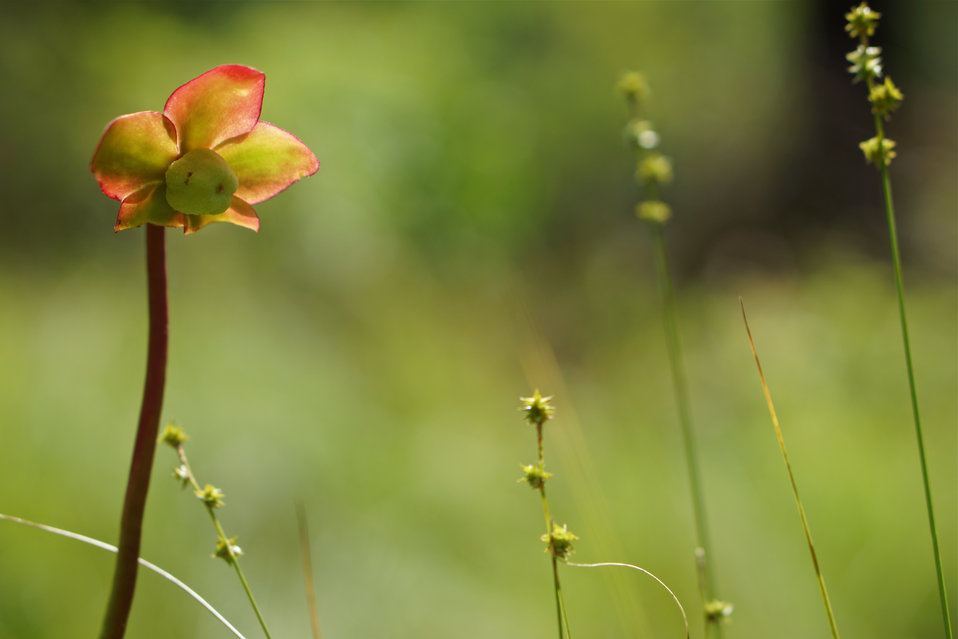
Mountain purple pitcher plant flower

In May, bog conservationists from Tennessee, North Carolina, and Georgia convened in the north Georgia mountains for the spring, 2014 meeting of the Bog Learning Network. The event provided an opportunity for biologists to see, first hand, the result of management efforts at two north Georgia bogs. More importantly, the outings provided an opportunity to share innovative approaches to bog management, such as the role of the Georgia Plant Conservation Alliance in conserving rare plants and coordinating a cadre of volunteers to work on bog management.

The Bog Learning Network was convened in the winter of 2013 as a way to bring together people working for bog conservation across the Southern Appalachians. Southern Appalachian bogs are one of North America’s rarest habitats and home to many rare plants and animals.